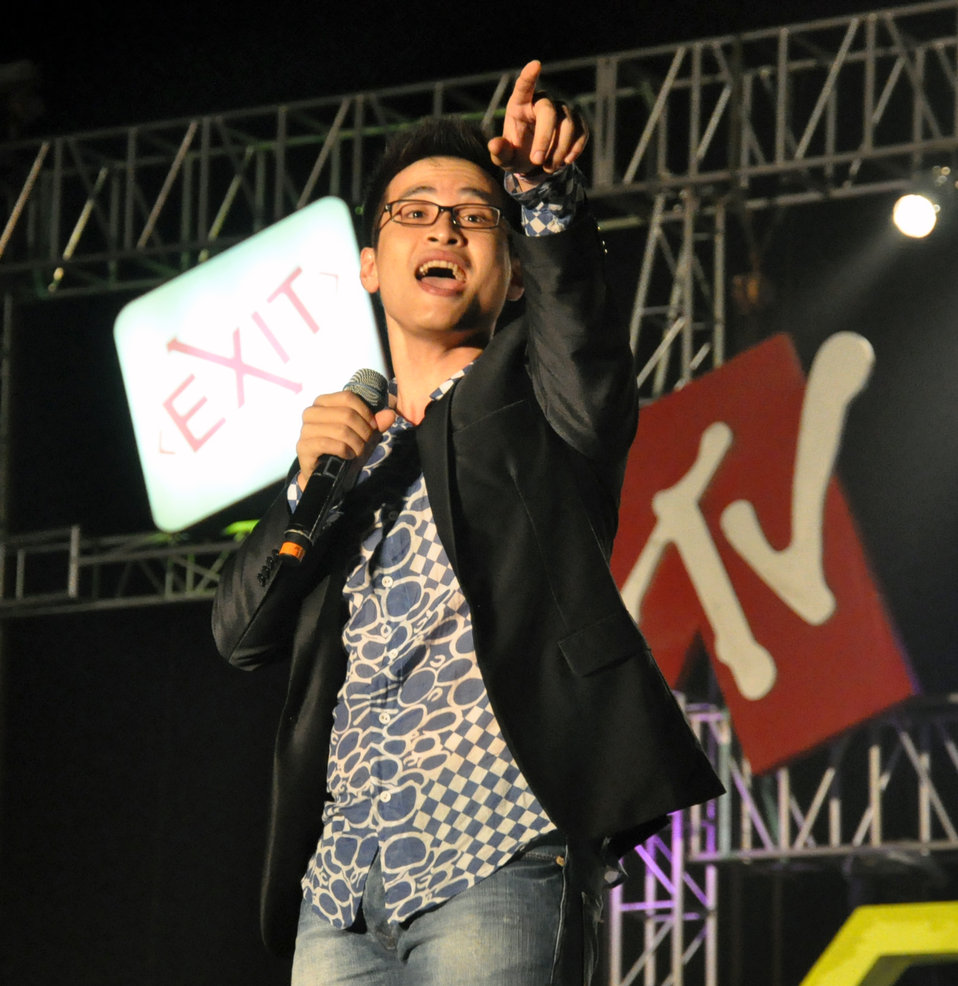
USAID and MTVEXIT Concert Halong Bay

Halong Bay Concert, April 4, 2010